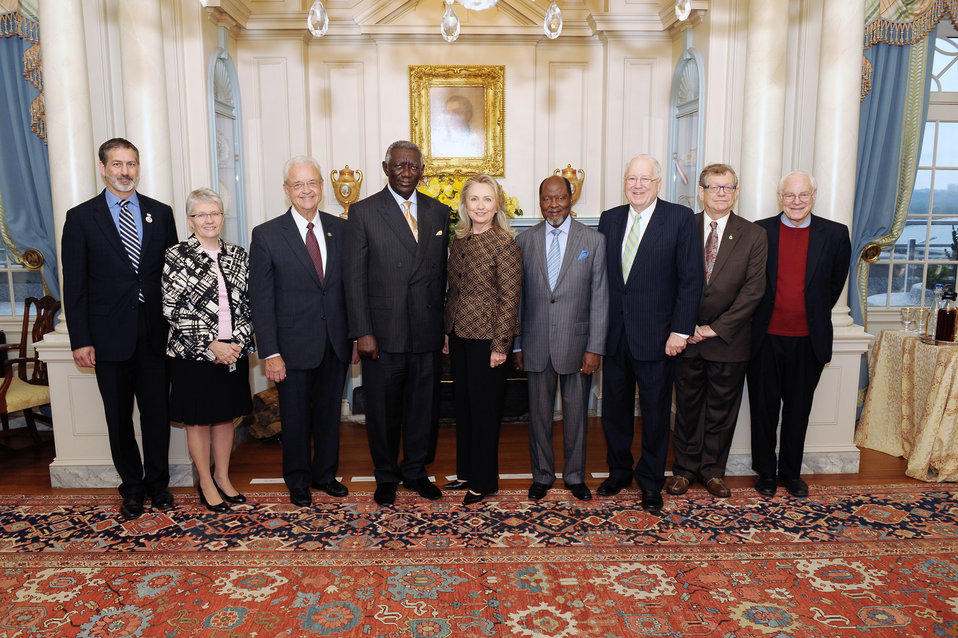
Secretary Clinton Poses for a Photo With 2012 World Food Prize Laureate Participants

U.S. Secretary of State Hillary Rodham Clinton poses for a photo with 2012 World Food Prize Laureate participants at the Department of State in Washington, D.C. on June 12, 2012.